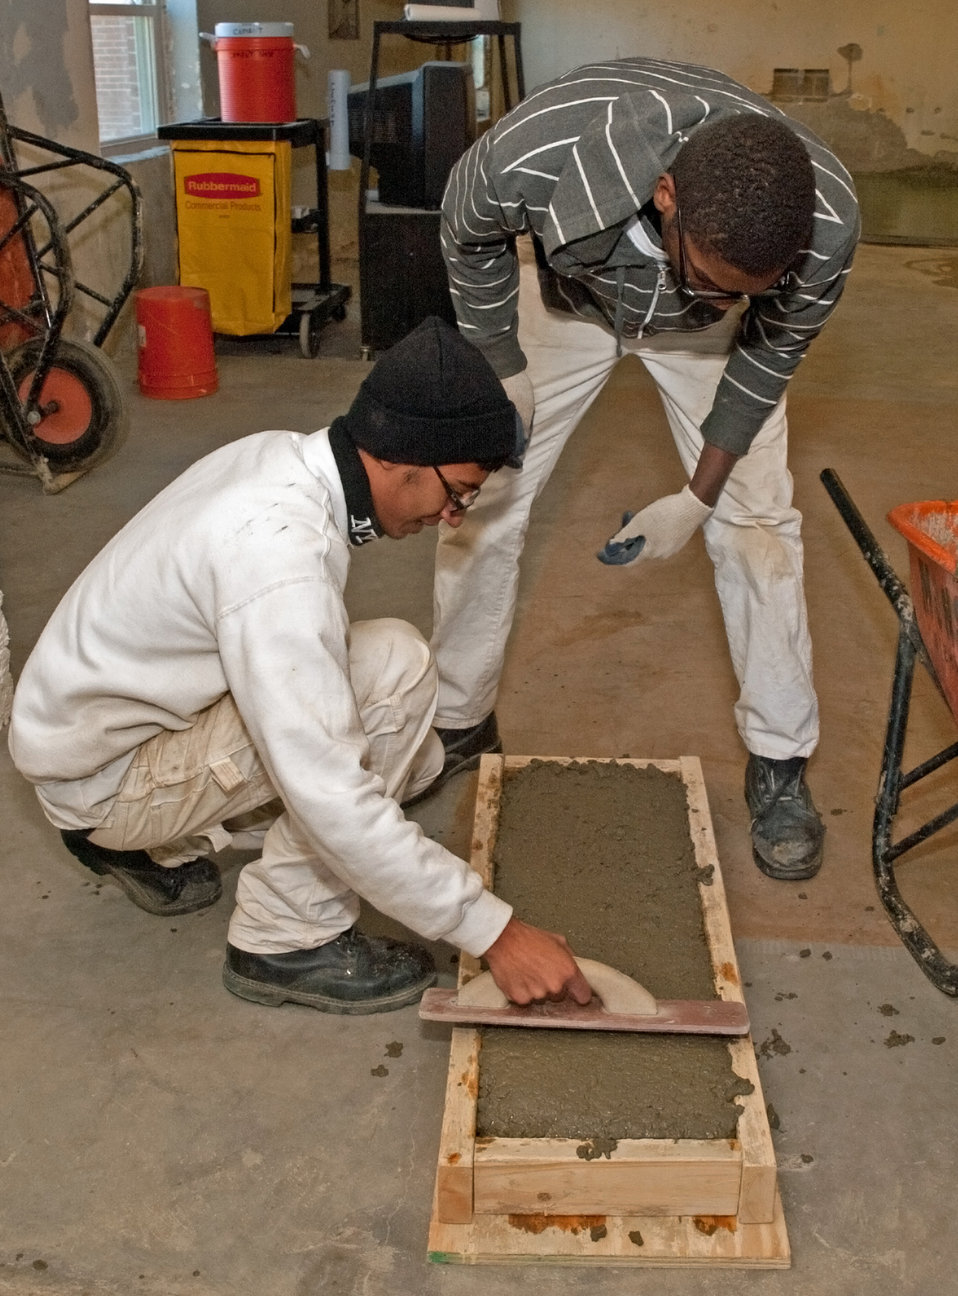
(L to R) Students Joshua Kissoon and Denzel McGill practice concrete pouring in the Cement Masonry trade class at the Job Civilian Conservation Corp Center (JCCCC) in Harpers Ferry, WV on Nov. 8, 2012. The U.S. Forest Service manages 28 Job Corps Civilian Conservation Centers.